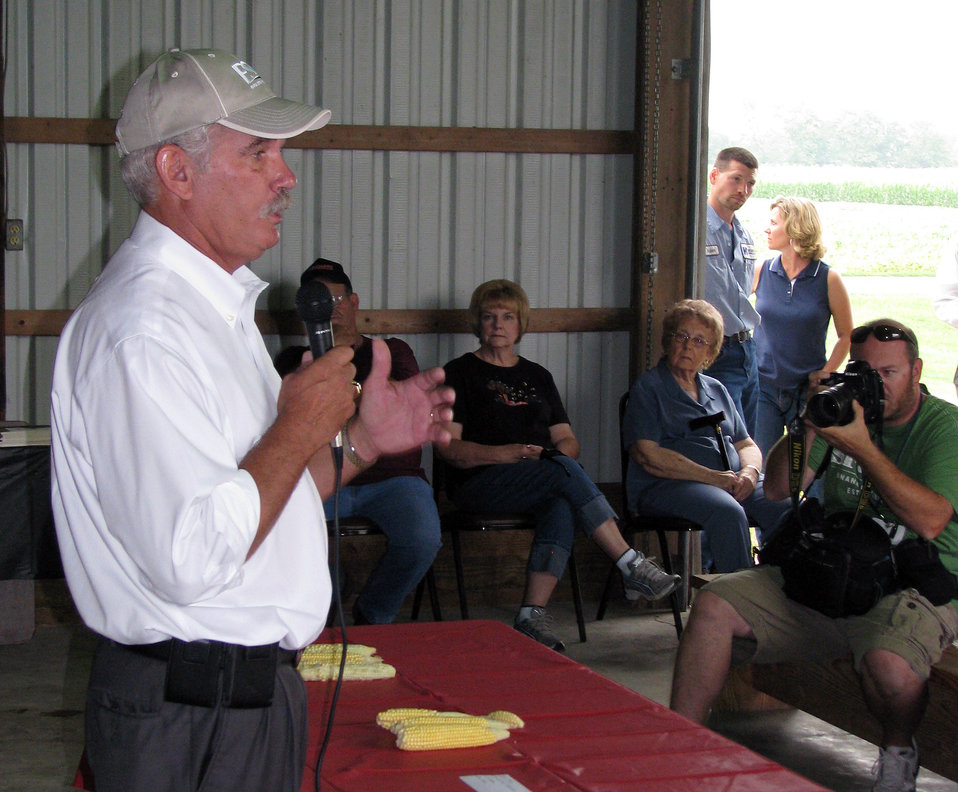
Agriculture Under Secretary for Farm and Foreign Agriculture Service (FFAS) Michael Scuse addresses a public meeting in Whiteland, IN on Thursday, July 19, 2012. Agriculture Secretary Vilsack has instructed Agriculture subcabinet leaders to travel to affected drought areas to augment ongoing assistance from state-level U.S. Department of Agriculture (USDA) staff and provide guidance on USDA’s new, streamlined disaster process. The U.S. Drought Monitor currently reports that 61 percent of the continental United States is in a moderate to exceptional drought.